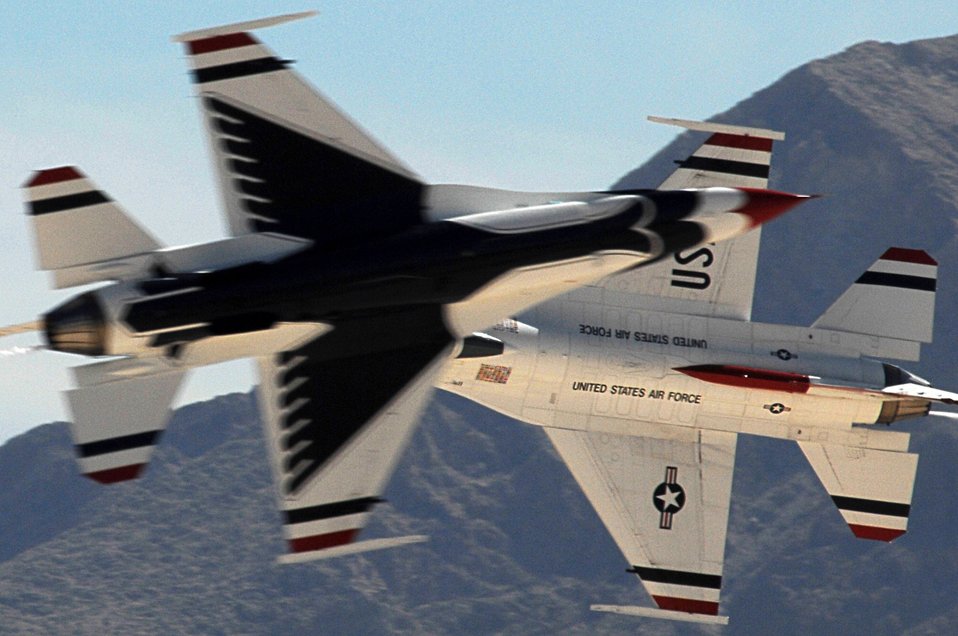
Practice makes perfect

Air Force Thunderbird pilots Maj. Ed Casey and Maj. Samantha Weeks perform the